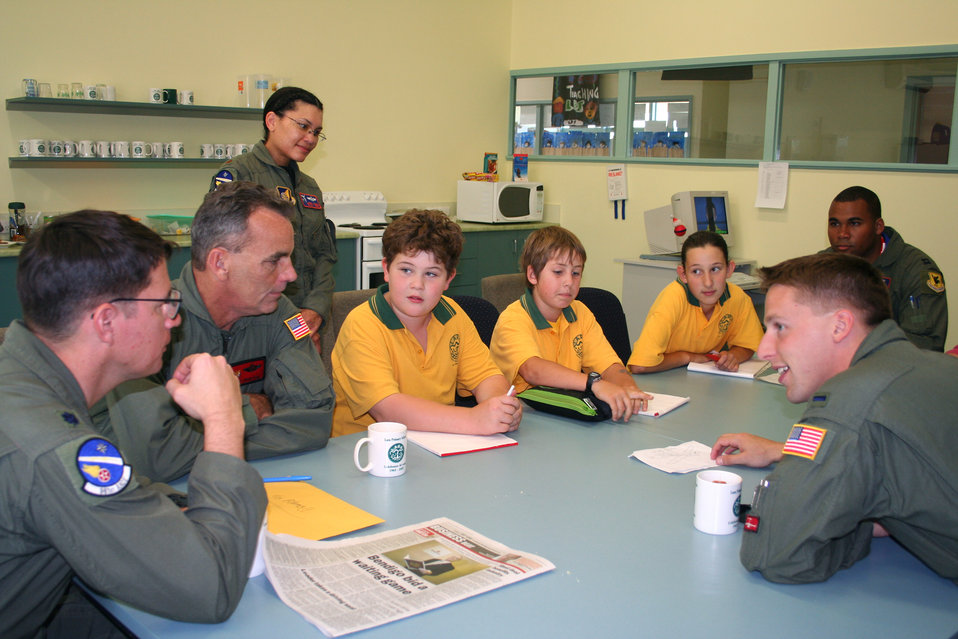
Airmen visit Australian primary school

Lt. Col. Pete Bastien from Kadena Air Base, Japan; Master Sgt. Chuck Fish of Hickam Air Force Base, Hawaii; Maj. Janel Egana and Capt. C. D. Henderson from Kadena AB; and 1st Lt. Ryan Freeman of Hickam AFB talk to Lara Primary School sixth-graders Liam Carter, Brandon Steele and Andrea Lackovic on how to build a model airplane for their school project. The Airmen visited the school in Victoria, Australia, March 22 to speak to students about being in the Air Force. They are in Australia supporting Australian International Airshow 2007.